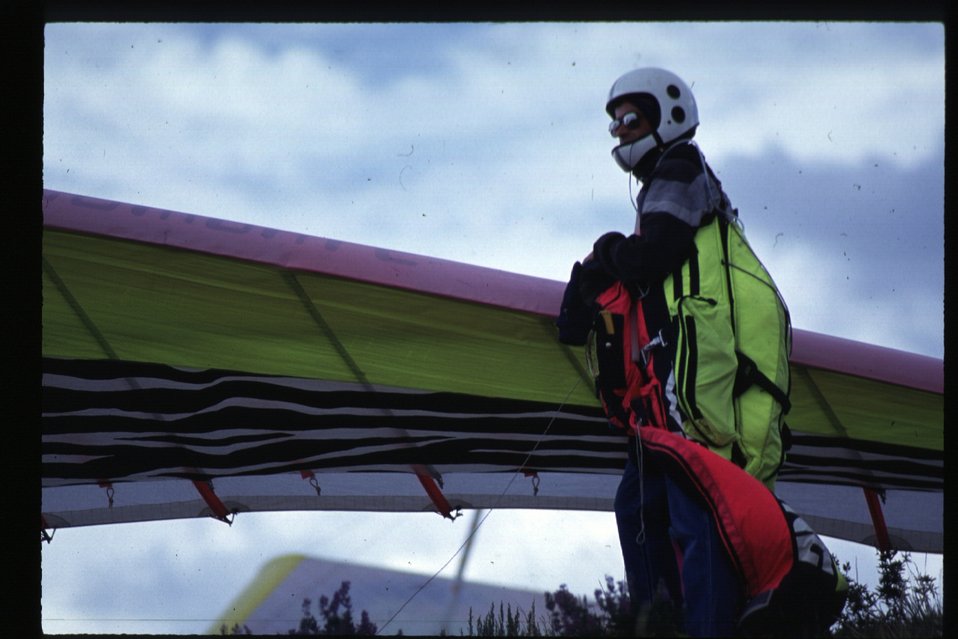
Hang Gliders on King Mountain Arco Idaho Idaho Falls Field Office USRD Upper Snake River District